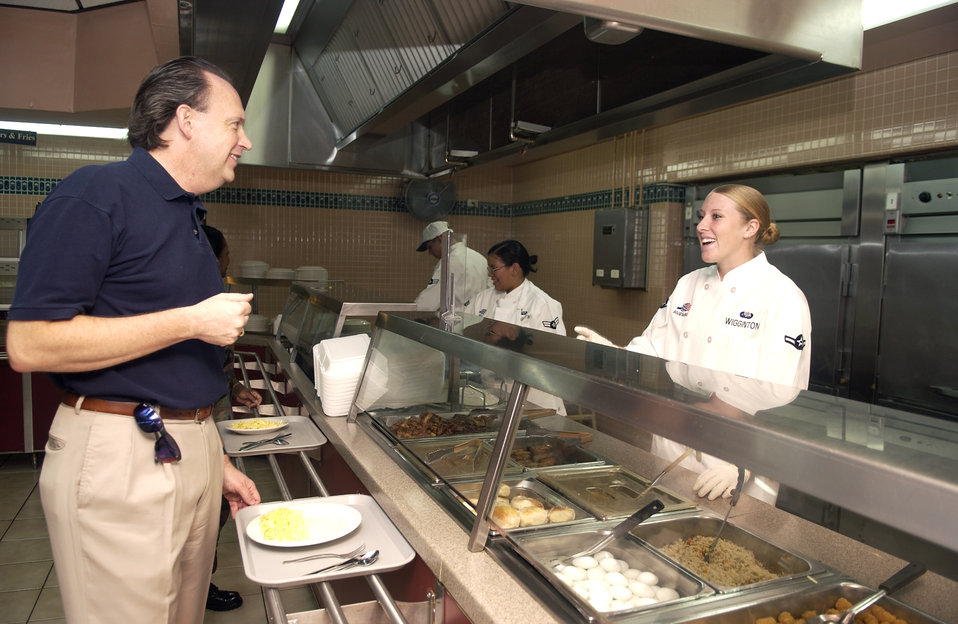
Service secretaries visit Guam to analyze joint basing status

Airman Jaclyn Wiggington talks with William C. Anderson Jan. 20 during his visit to Andersen Air Force Base, Guam. As assistant secretary of the Air Force, Mr. Anderson heads three division departments that deal at the policy level with Air Force facility and logistical issues. Airman Wiggington is assigned to the 36th Services Squadron.